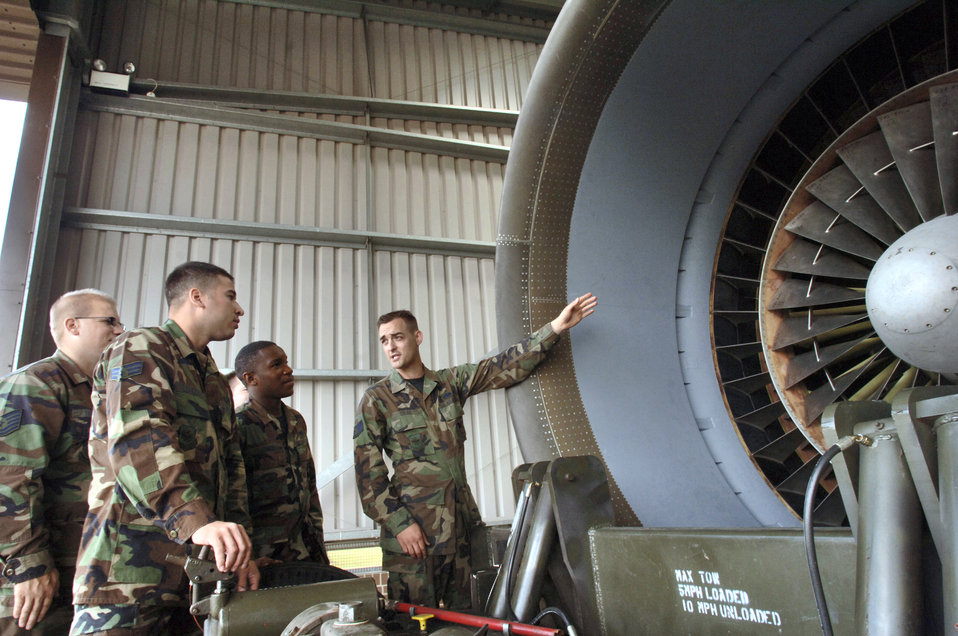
Aerial port Airmen make own training opportunities

Staff Sgt. Erik Lucas (right) trains Tech. Sgt. Douglas Younts (left to right) and Senior Airmen Pablo Londono and Erick Combs on how to inspect an engine at Royal Air Force Mildenhall, England, on July 31. The Airmen are with the 727th Air Mobility Squadron. The squadron keeps and maintains spare C-5 Galaxy engines in case a visiting transport needs an engine swap. Each engine produces 43,000 pounds thrust, weighs 7,900 pounds and is nearly 27 feet long.